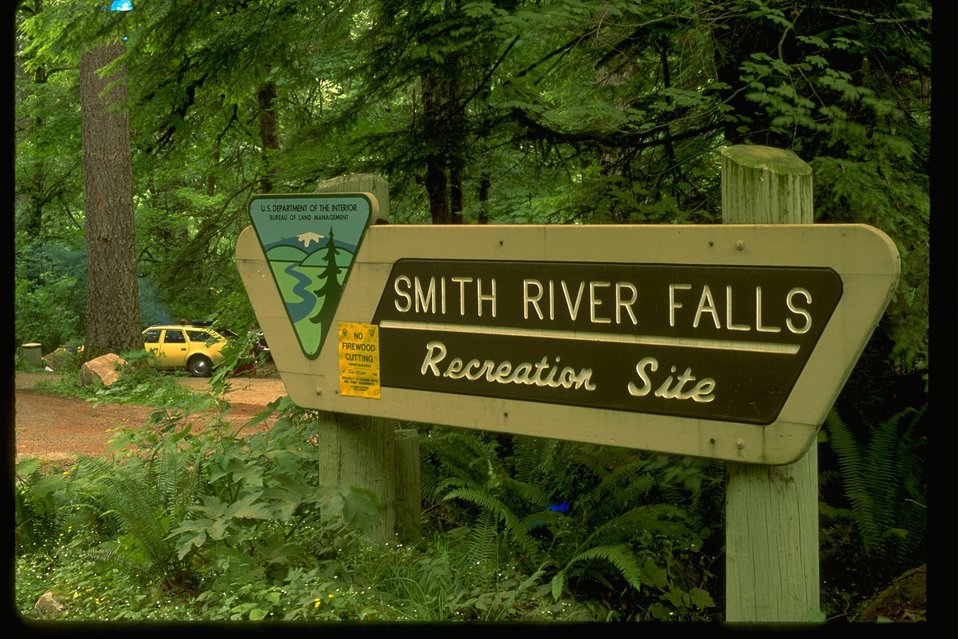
Smith River Falls sign: Recreation Site.